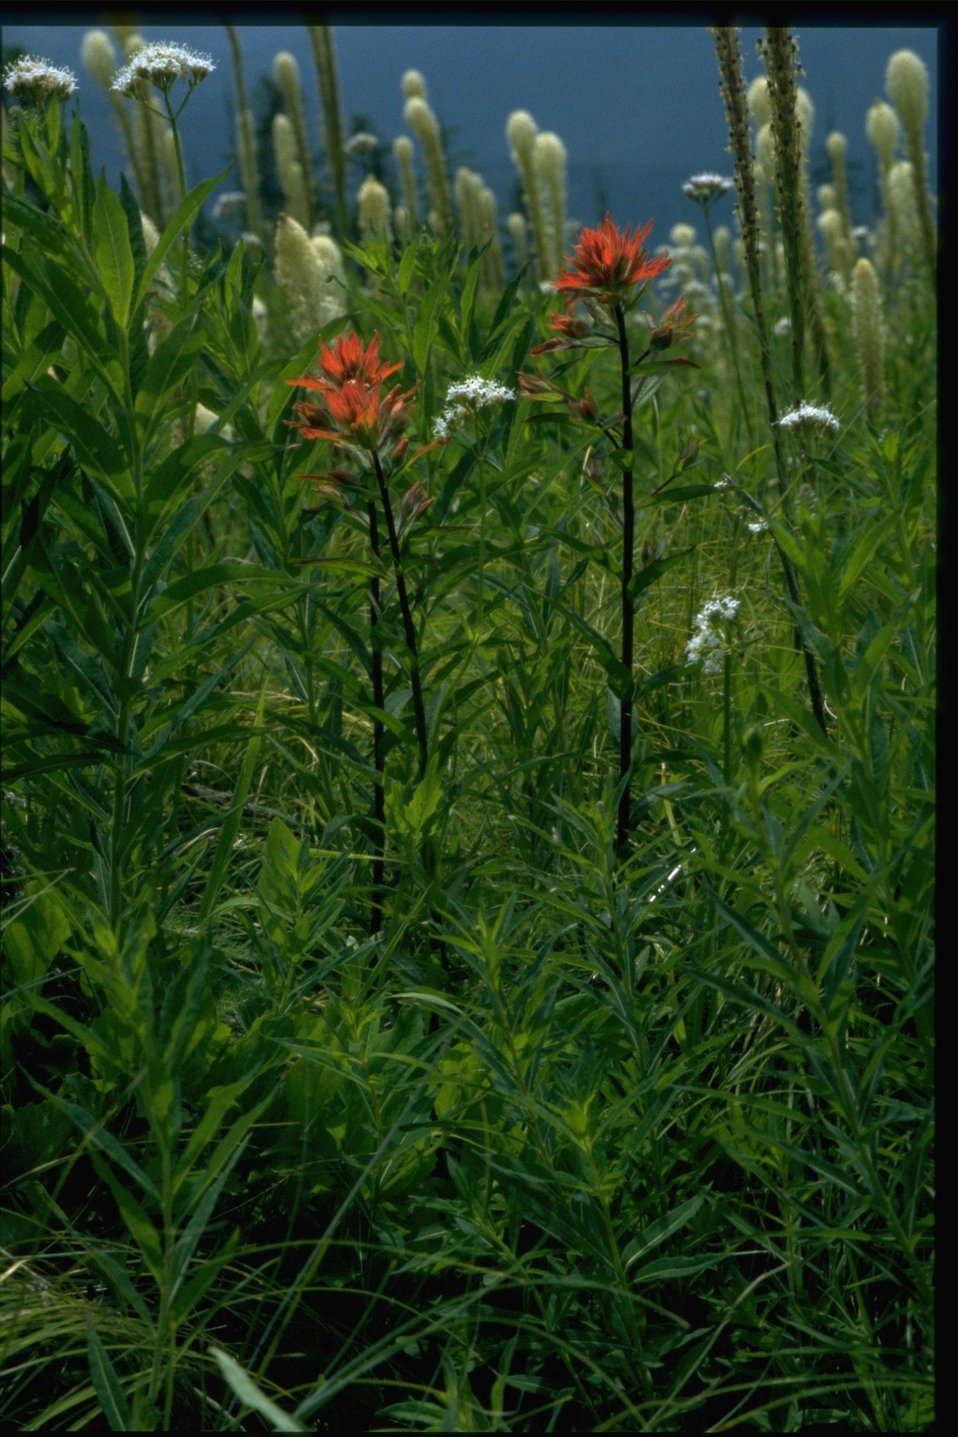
Medium shot of Castilleja, Xenophyllum, Archillea.